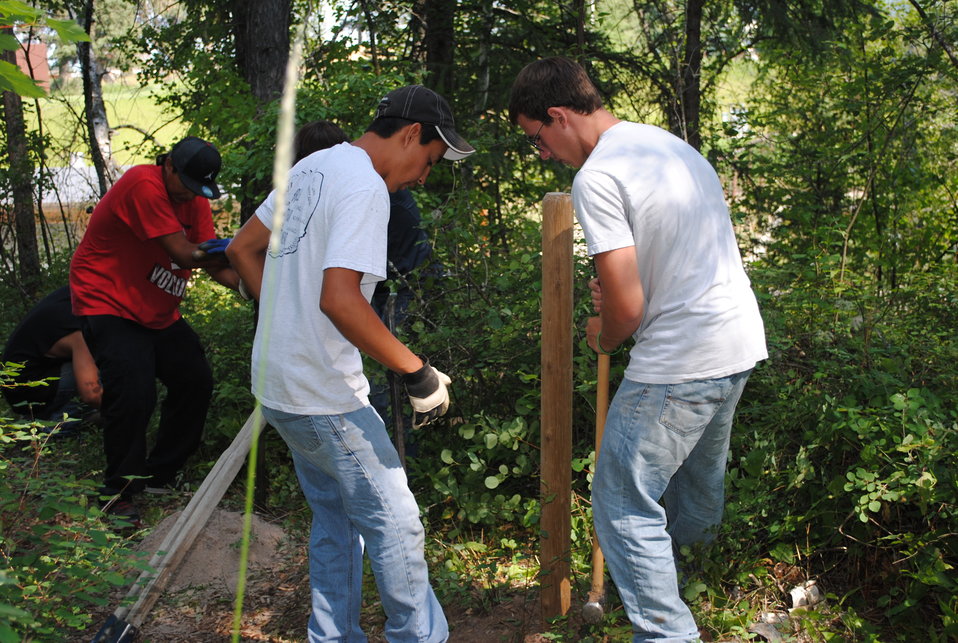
Montana Tribal Conservation Corps Youth Bulding New a Fence at Creston's Nature Trail

Building fence is one of many jobs the Youth Conservation Cops students did throughout the summer season. Work took place for five weeks on the Salish and Kootenai Reservation and for three weeks at the Creston National Fish Hatchery.